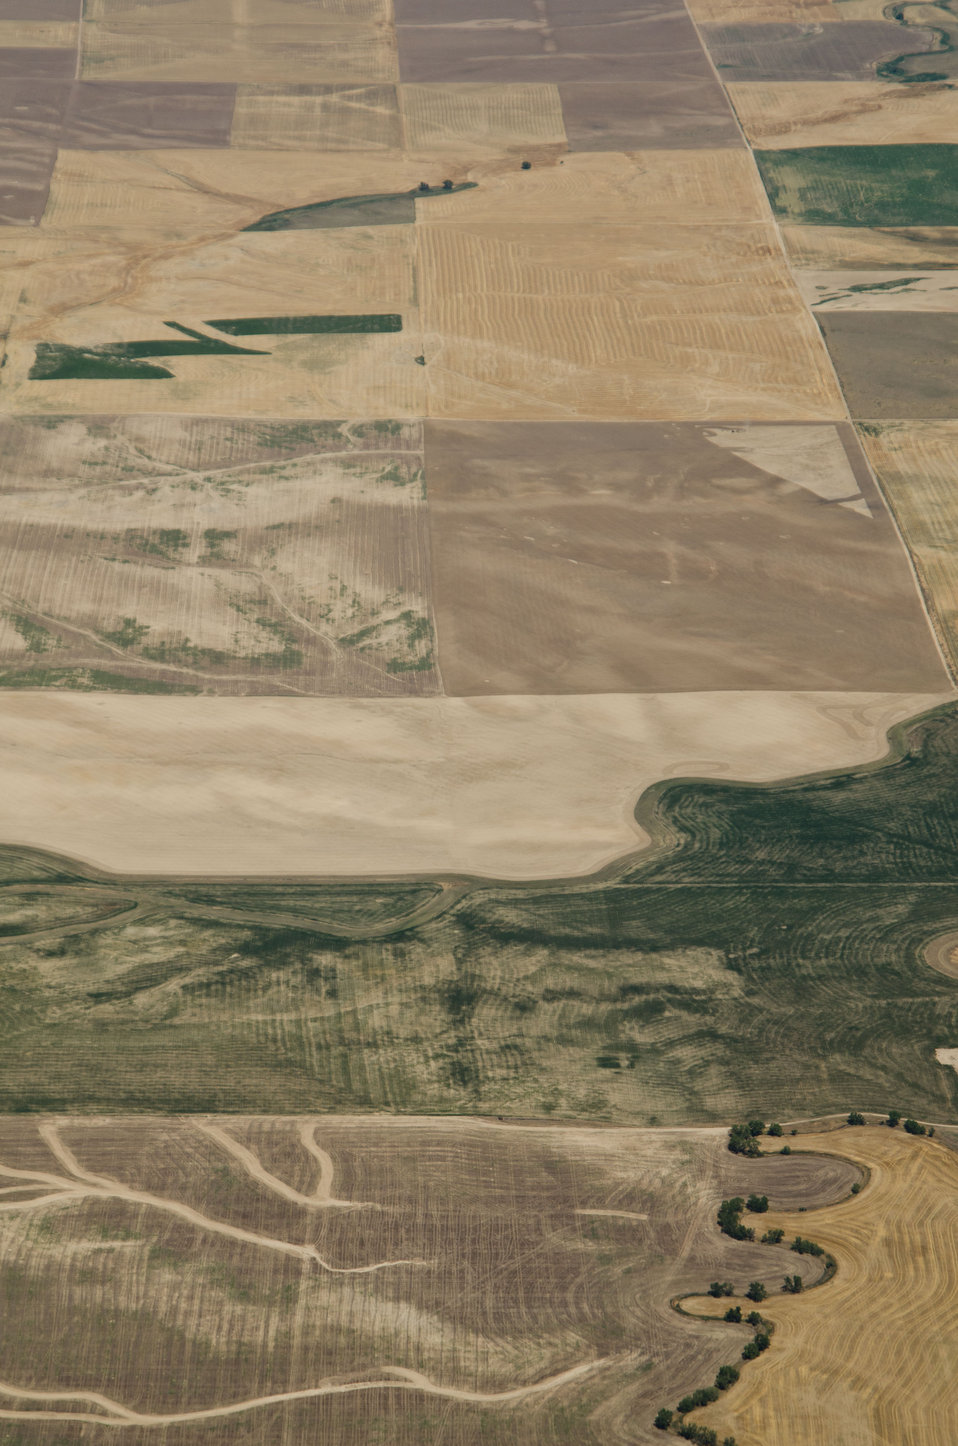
Aerial views of drought affected Colorado dryland crops near Byers, Colorado, on Saturday, July 21, 2012. Green areas are irrigated.